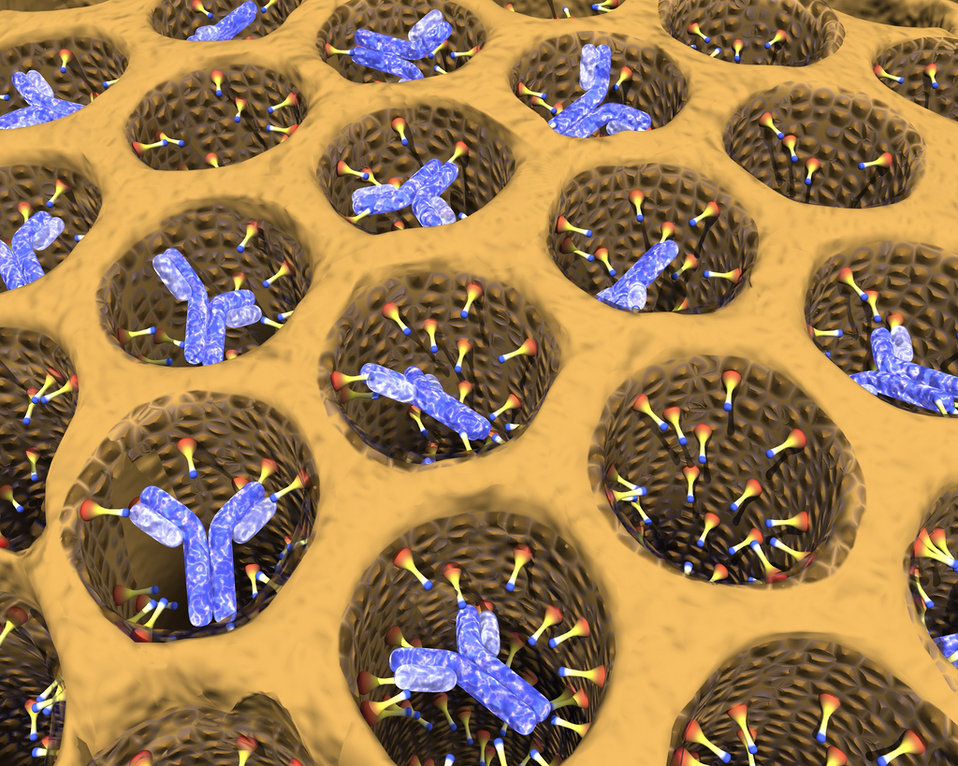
Artist's rendering of small chemical ornaments (cones) slow the release of anti-cancer antibodies (blue) from this functionalized mesoporous silica (orange).